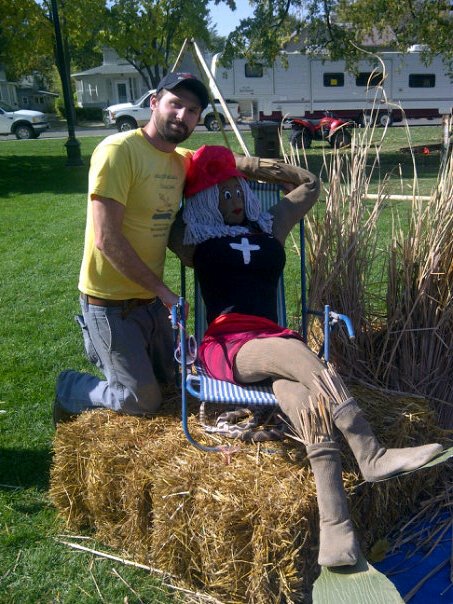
2011 Scarecrow Festival

Bio Tech Justin Dupey posing with our scarecrow lifeguard.